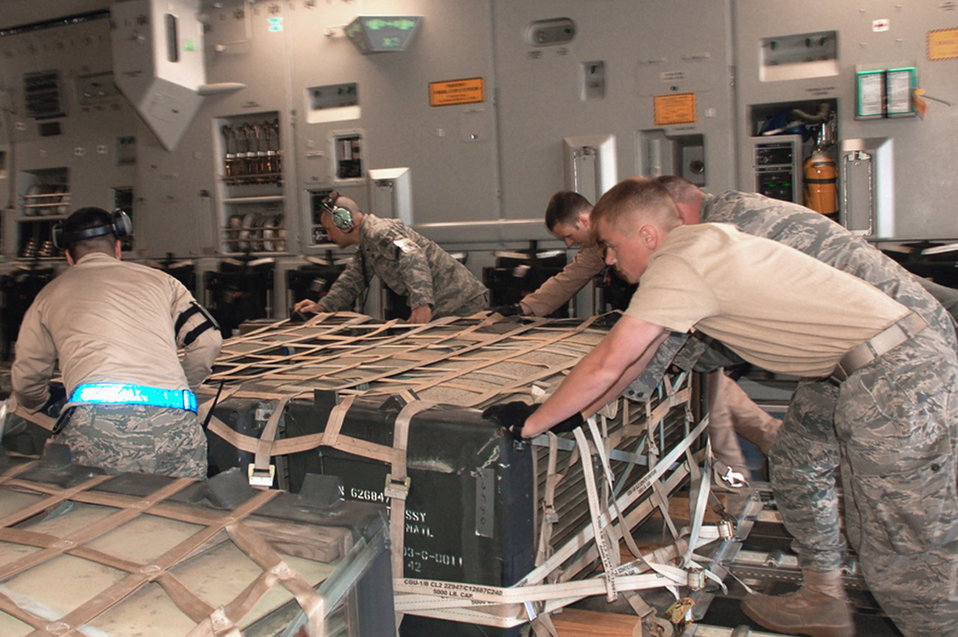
C-17 stage crew at Manas ramp up support for OEF

Air crew members and aerial port Airmen work together April 18 to push a pallet of cargo onto a C-17 Globemaster III destined for Afghanistan, from Manas Air Base, Kyrgyzstan. The crews have been flying three flights from Manas nearly every day in order to deliver needed supplies for the buildup of various bases supporting Operation Enduring Freedom. This C-17 is from the 535th Airlift Squadron at Hickam Air Force Base, Hawaii.